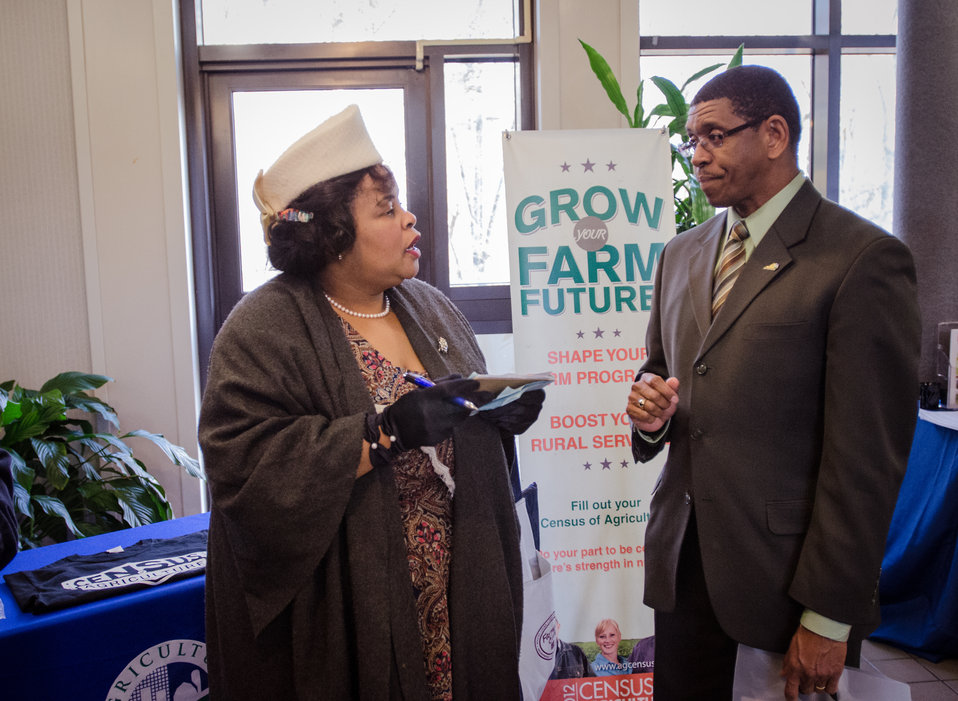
U.S. Department of Agriculture (USDA), National Agricultural Statistics Service Virginia Field Office State Statistician Herman Ellison, right, listens to the statistical needs of a farmer participating in the “Virginia State University (VSU), USDA and Virginia Farmers Working Together” outreach workshop in the VSU, L. Douglas Wilder building on Thursday, March 7, 2013, in Petersburg, VA. Farmers shared and learned new ways to do more with USDA services, and how to apply for programs that will help grow their business.